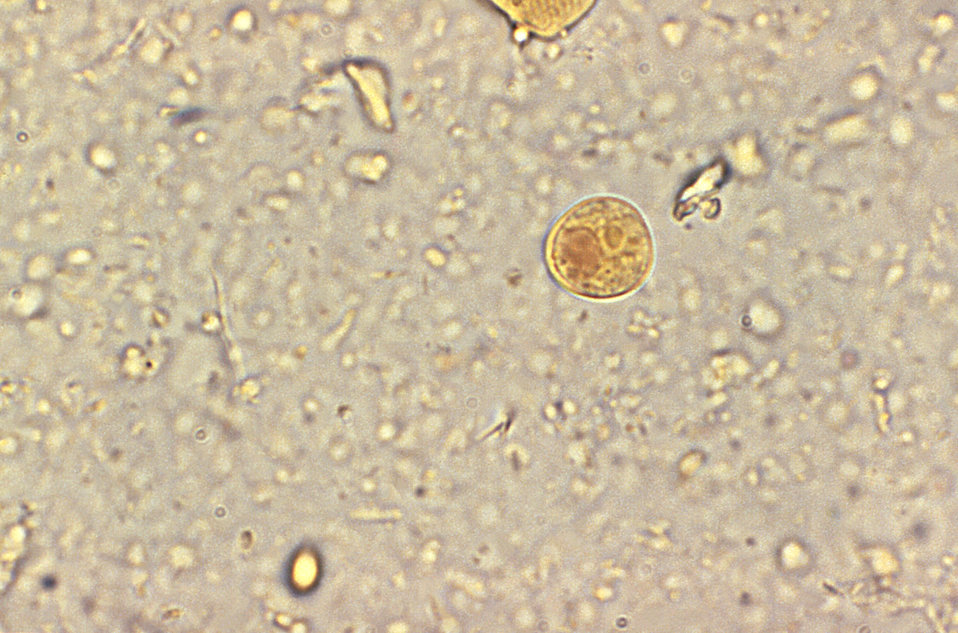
This iodine-stained photomicrograph depicts a single spheroid Iodamoeba buetschlii parasitic cyst within which the darkly-staining large glycogen vacuole is clearly visible.